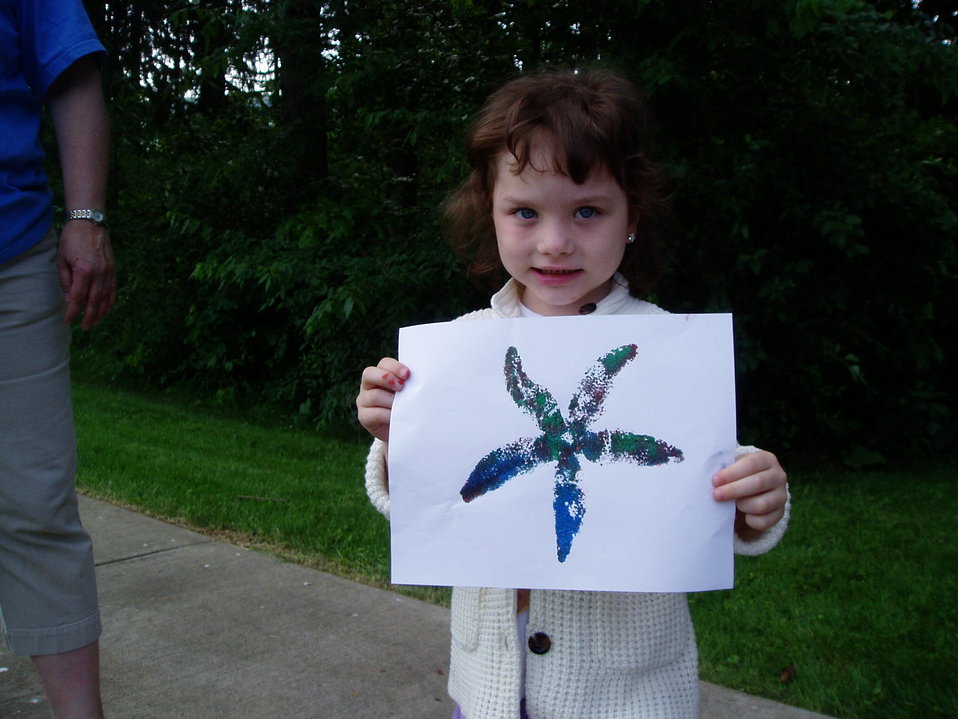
Northeast Fishery Center's Annual Fishing Event

Young girl shows off her artwork at the Northeast Fishery Center's annual fishing event in Lamar, PA.